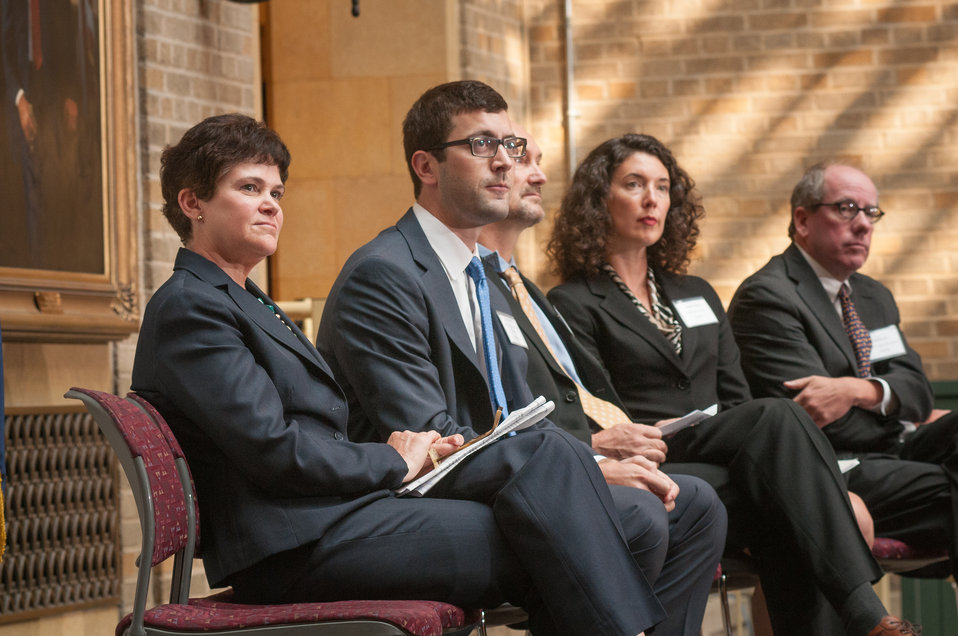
U.S. Department of Agriculture (USDA) Deputy Secretary Krysta Harden hosts the signing of the USDA Bioenergy Memorandum of Understanding and was joined by leaders from, Biomass Power Association, President and CEO Bob Cleaves; Pellet Fuels Institute Executive, Director Jennifer Hedrick; Biomass Thermal Energy Council, Executive Director Joseph Seymour; and Alliance for Green Heat, President John Ackerly, for the announcement of the new partnership agreement, at the USDA Headquarters, in Washington, D.C., on Wednesday, September 11, 2013. Moderating the event is Under Secretary for Rural Development Doug O’Brien.
The partnership agreement focuses on promoting wood energy nationwide as a means to address fire risks, bolster rural economic development, improve air quality, and help meet the Obama Administration’s renewable energy and energy efficiency goals. These organizations support the use of wood energy across the scale of users – from residential users, to commercial and intuitional facilities, to industrial production of heat and or electricity to drive businesses and feed the electrical grid.
Under the terms of the five grants announced by Deputy Secretary Harden, private, state and federal organizations will work together to stimulate the development of additional wood energy projects in their states. Collectively, $2.9 million will be spent o this effort -- $1.1 million on federal funds and $1.8 million in non federal funds. For more information o0n the cooperative agreement program, visit na.fs.fed.us.werc/wood-energy/ USDA Photo by Lance Cheung.